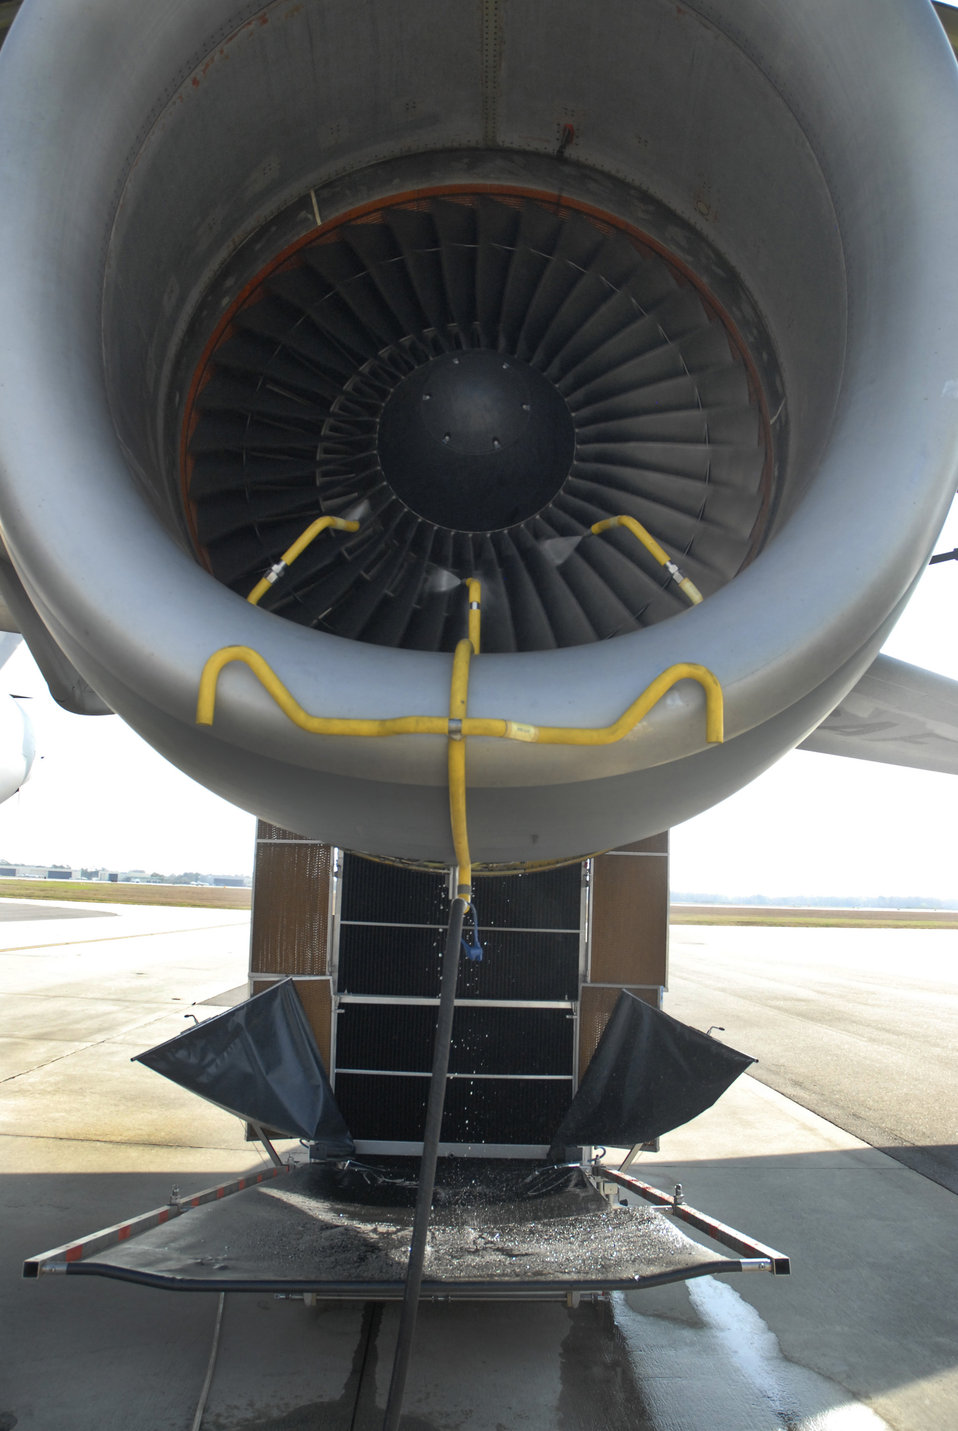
AMC goes green with aircraft engine washes

A C-17 Globemaster III engine is washed with the EcoPower Engine Wash System March 12 at Charleston Air Force Base, S.C. The engine wash system is a closed-loop system that uses only atomized water, collects the effluent water and purifies it for recycled use.